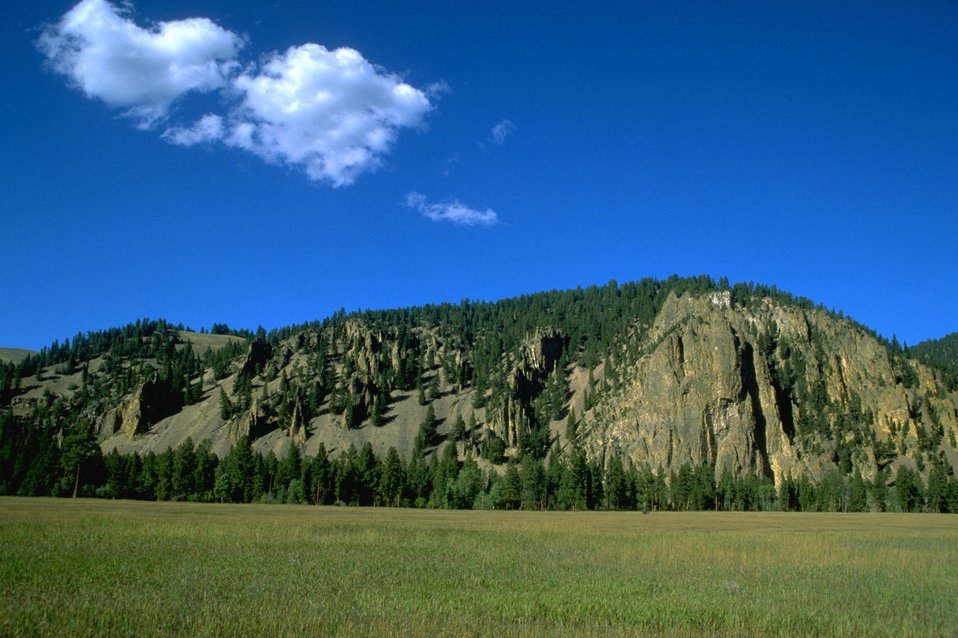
Squaw Rock ACEC (area of critical environmental concern)